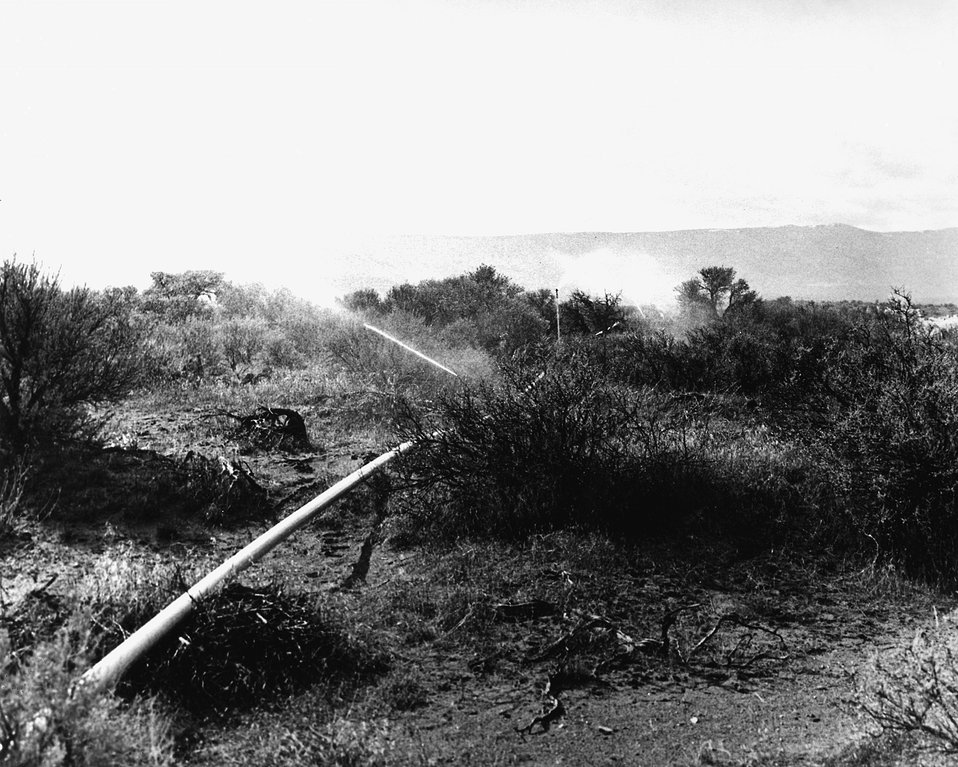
In order to understand the workings of natural systems in shorter time spans Pacific Northwest Laboratory ecologists alter natural conditions in a limited area to see how the plants and animals respond. c. 1972